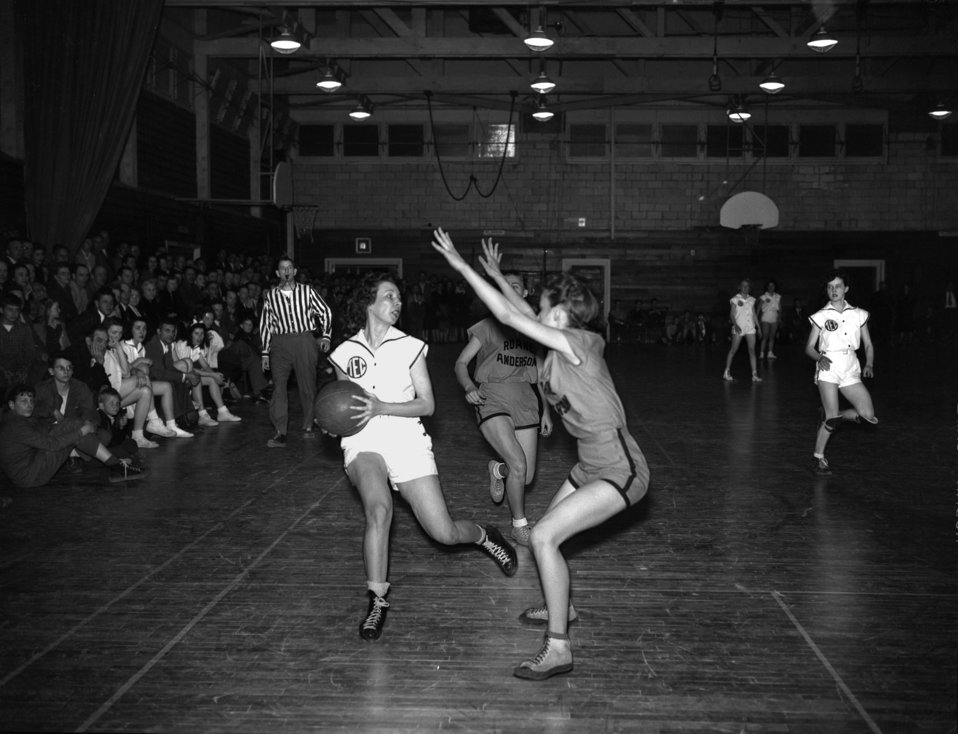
Girls Basketball RA and Eastman Oak Ridge

3355-6a DOE photo Ed Westcott 3-20-1947 Oak Ridge Tennessee